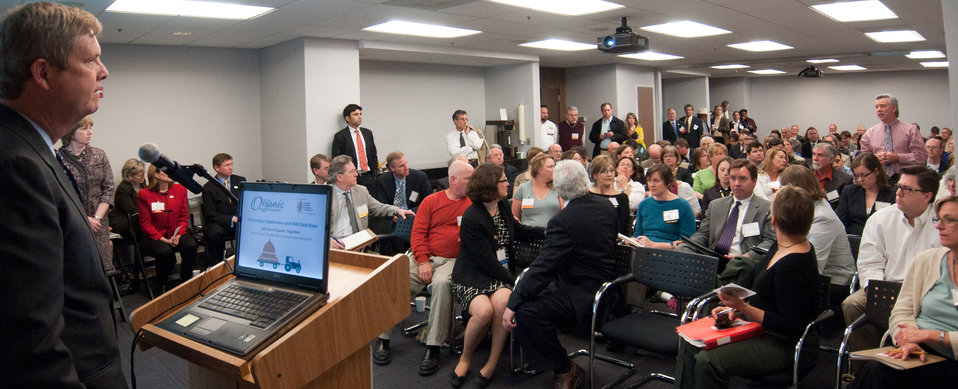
U.S. Department of Agriculture Secretary Tom Vilsack spoke and took questions at the Organic Trade Association’s, 2011 Policy Conference at the Hall of States, on Wednesday, April 6, 2011 in Washington, DC.